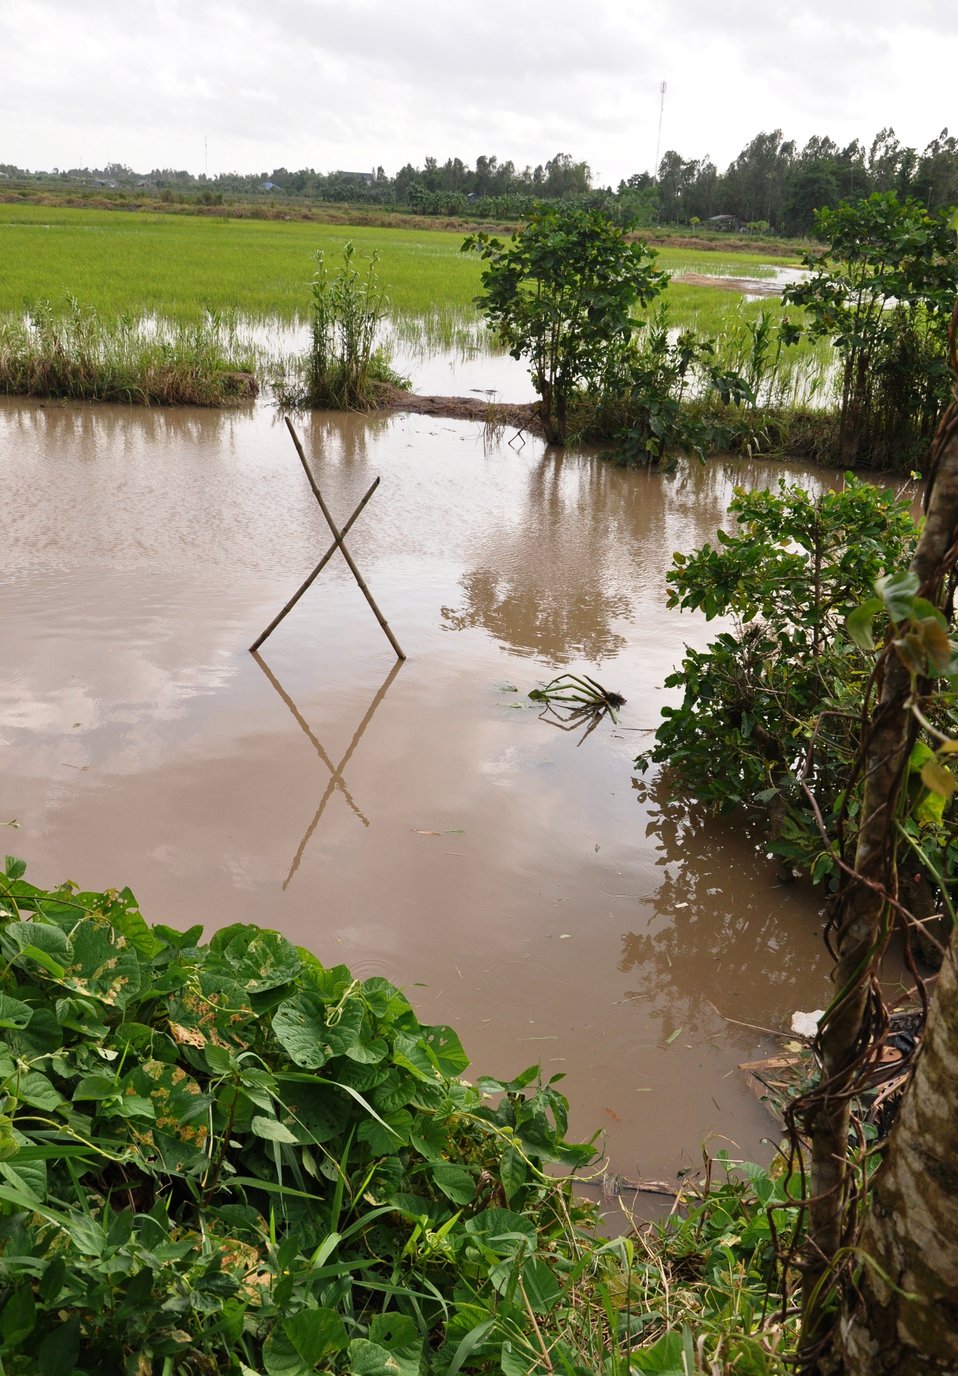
Scenic Mekong Delta in Vietnam

USAID provides training and support to poultry farmers to stem the spread of avian influenza.